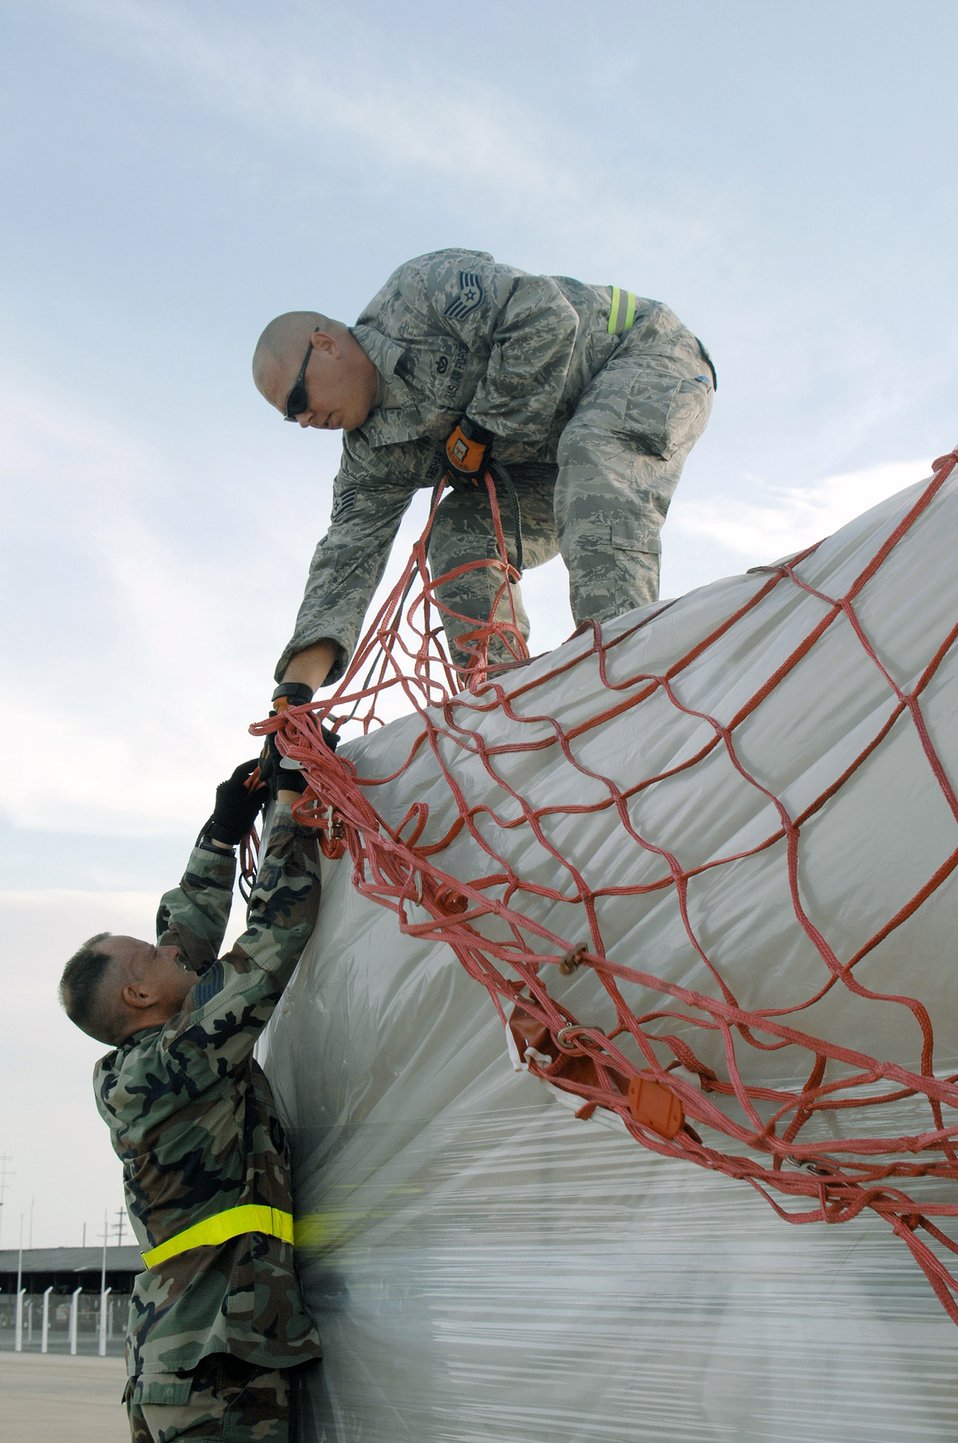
Help is on the way

Tech. Sgt. John Kortez (below) and Staff Sgt. Randy Afshar remove cargo netting from a pallet offloaded from a Boeing 747 commercial airplane May 16 at Utapao Thai Royal Navy Air Base, Thailand. The humanitarian aid supplies are to be delivered to Burma. Sergeant Kortez is from the 36th Contingency Response Squadron and Sergeant Afshar is from the 554th RED HORSE Squadron, both from Andersen Air Force Base, Guam.